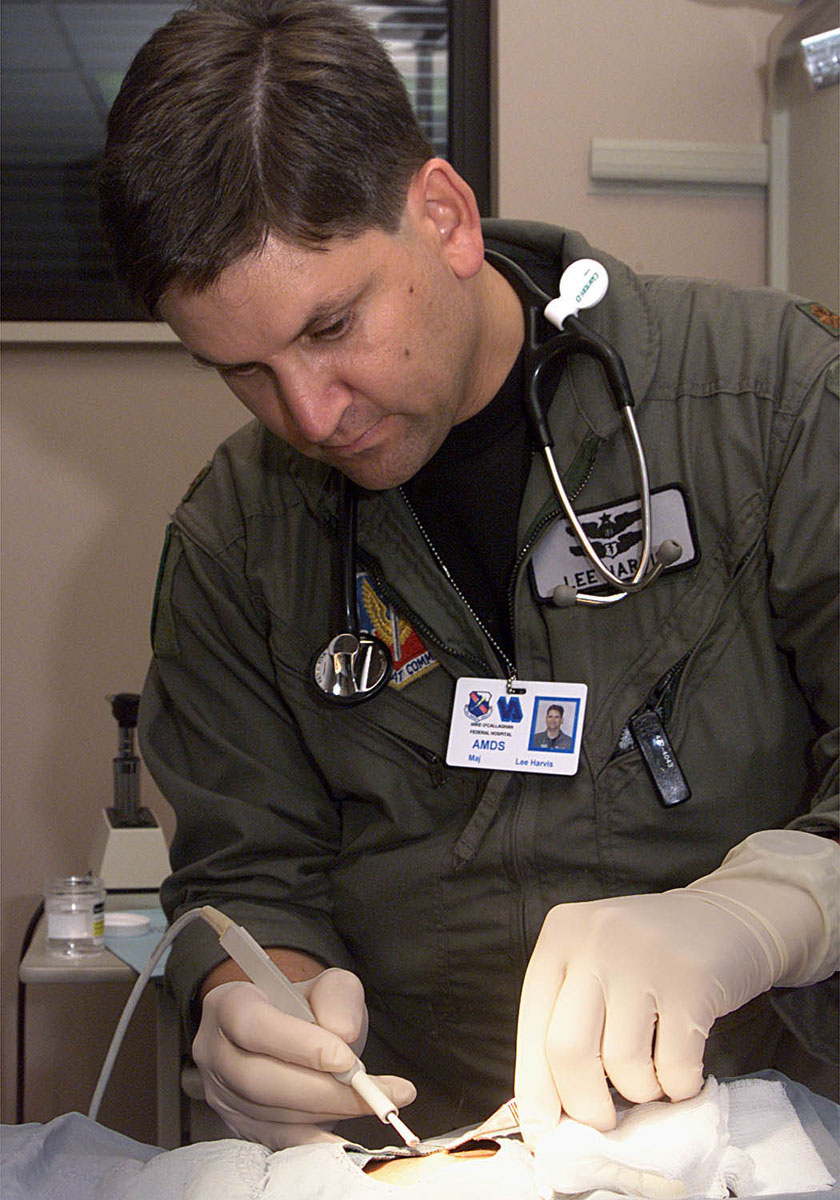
Flying Doc

NELLIS AIR FORCE BASE, Nev. -- Doctor (Maj.) Lee Harvis performs a procedure on a patient here at the base hospital. Harvis is also rated and flies the HH-60g Pave Hawk helicoper. He is one of ten fliers in the Air Force classified as a pilot-physician.